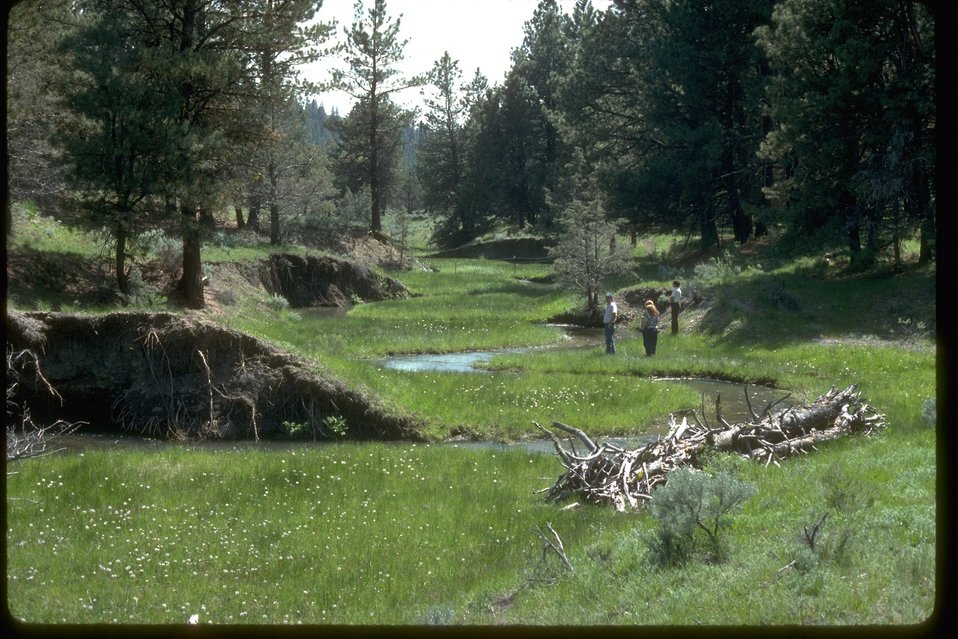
Stream functioning properly in central OR.